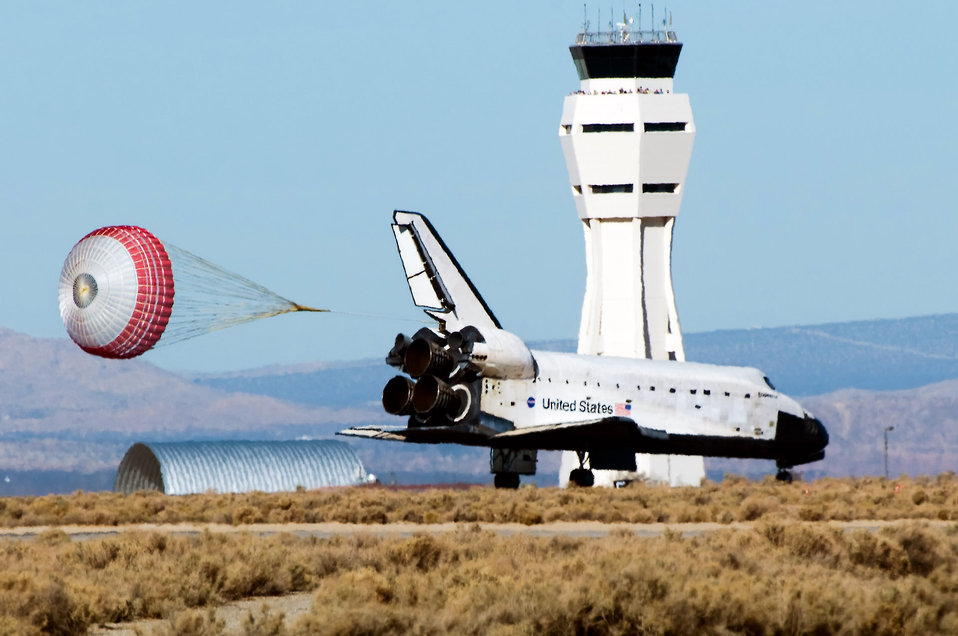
Space shuttle diverted, lands at Edwards

Space Shuttle Endeavour and its crew of seven astronauts touches down Nov. 30 at Edwards Air Force Base, Calif. This is the 52nd time NASA has used Edwards AFB as its alternate landing site.